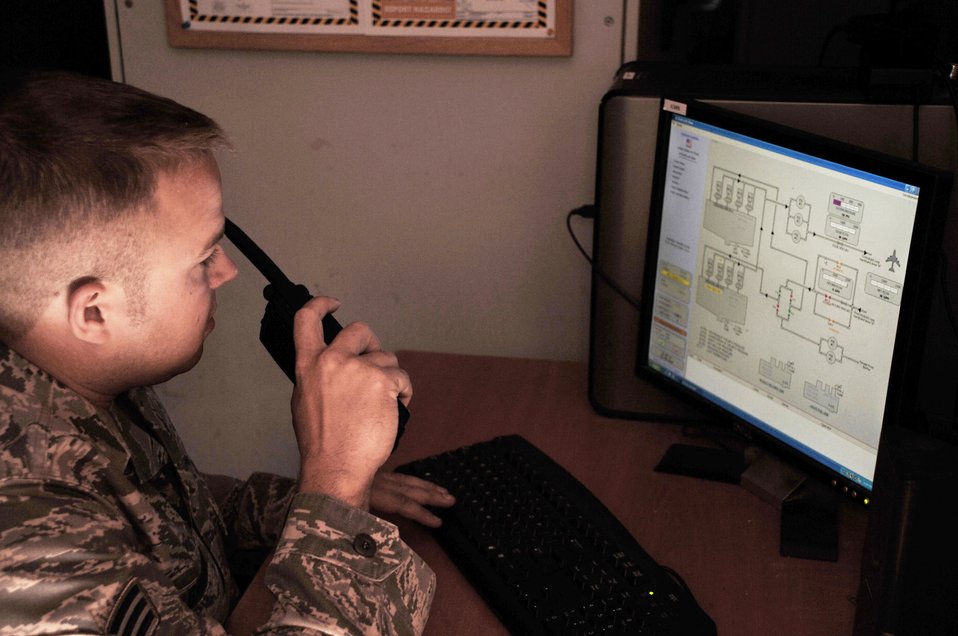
Airmen making a difference one gallon at a time

Senior Airman Kiel Gallant watches over the fuel line pressure during operations at the fuel pumping facility at base in Southwest Asia Jan. 6, 2010. Airman Gallant is a fuels distribution journeyman with the 380th Expeditionary Logistics Readiness Squadron fuels management flight.